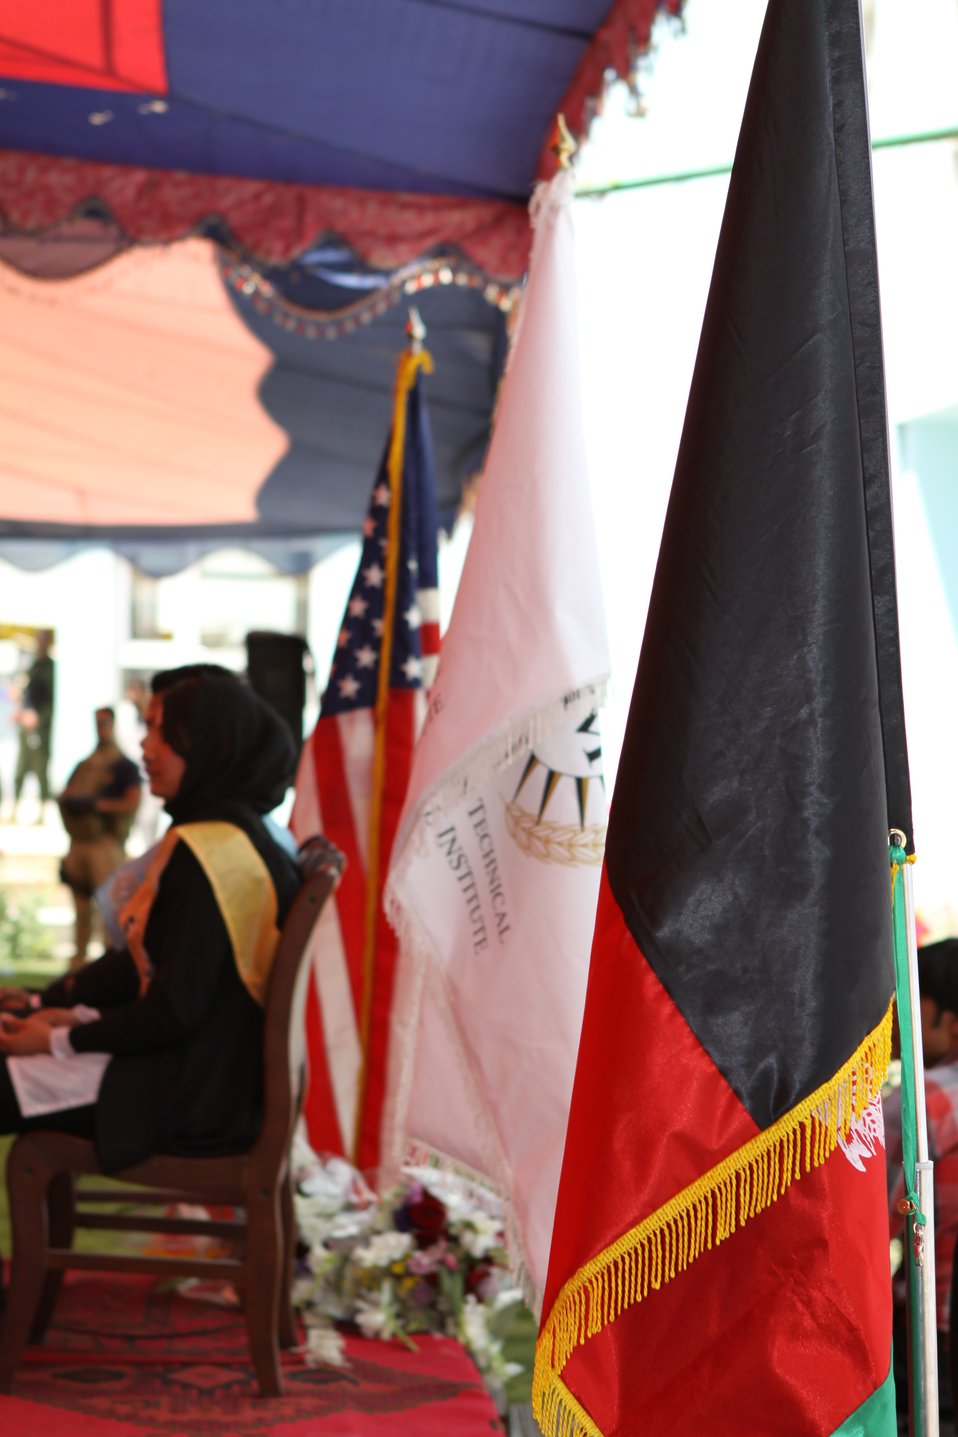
100522 ATVI Graduation 086